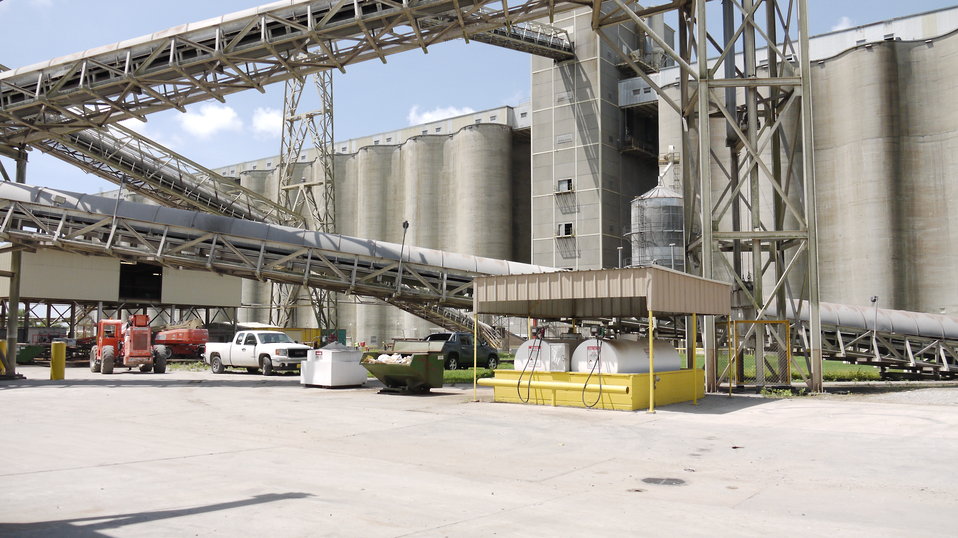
U.S. Department of Agriculture’s (USDA) Grain Inspection, Packers, and Stockyard Administration (GIPSA) goes to a grain elevator in Myrtle Grove, LA on Aug. 6, 2013 to calibrate weights. USDA GIPSA provides official testing of Automatic Bulk Weighing (Hopper) scales used in official certification of grain weight.